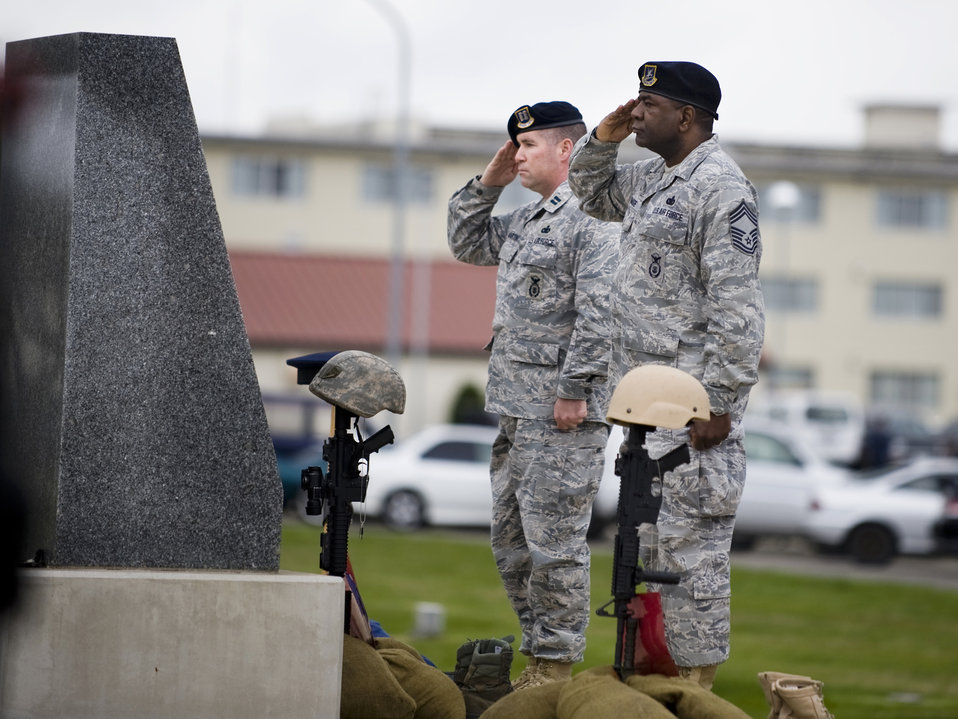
Remembering National Police Week

Capt. Leo Martin (rear), 35th Security Forces Squadron commander, and Chief Master Sgt. John Gammage, 35th SFS manager, take part in a retreat ceremony to wrap up National Police Week May 14, 2010, at Misawa Air Base, Japan. National Police Week honors fallen law enforcement officers and servicemembers.